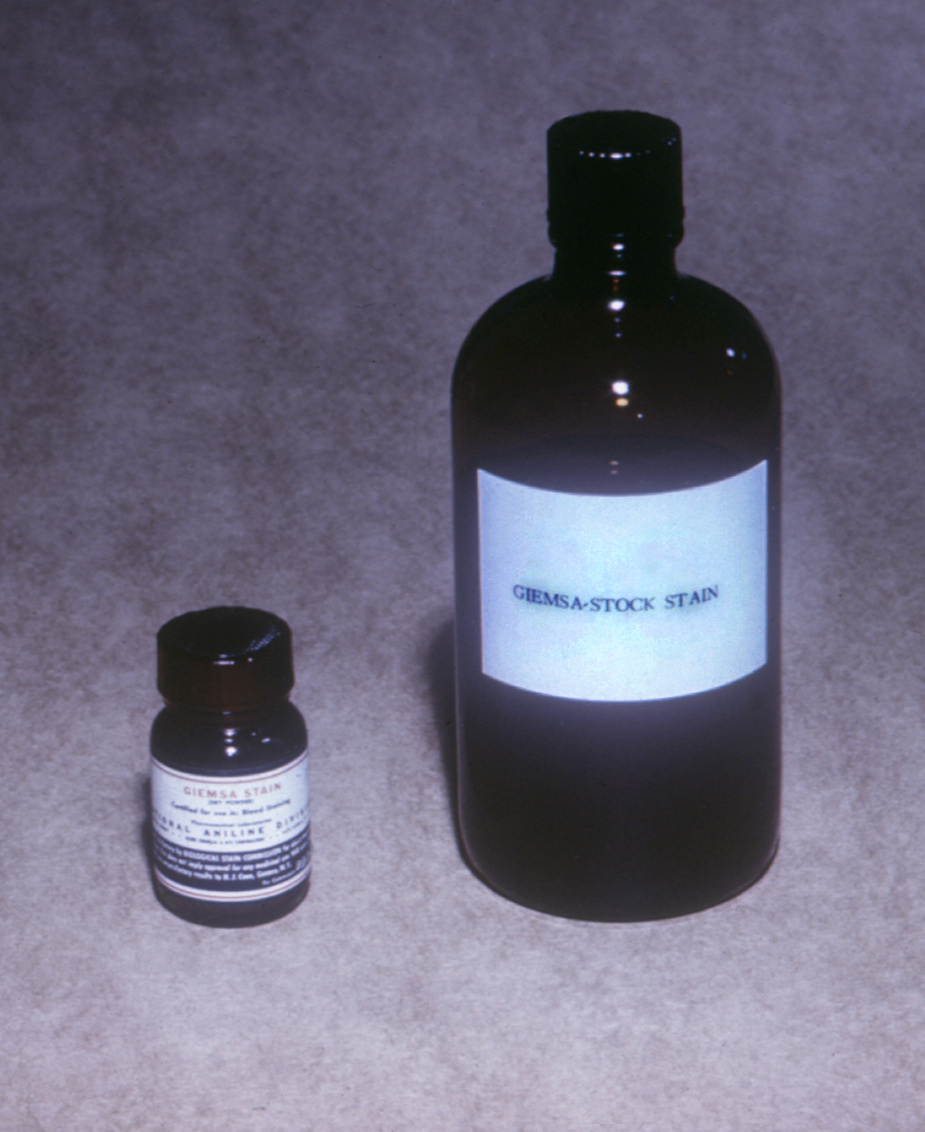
The Giemsa stain concentrate (Lt), and a stock solution of Giemsa stain (Rt) are used when preparing malarial microscope slides.